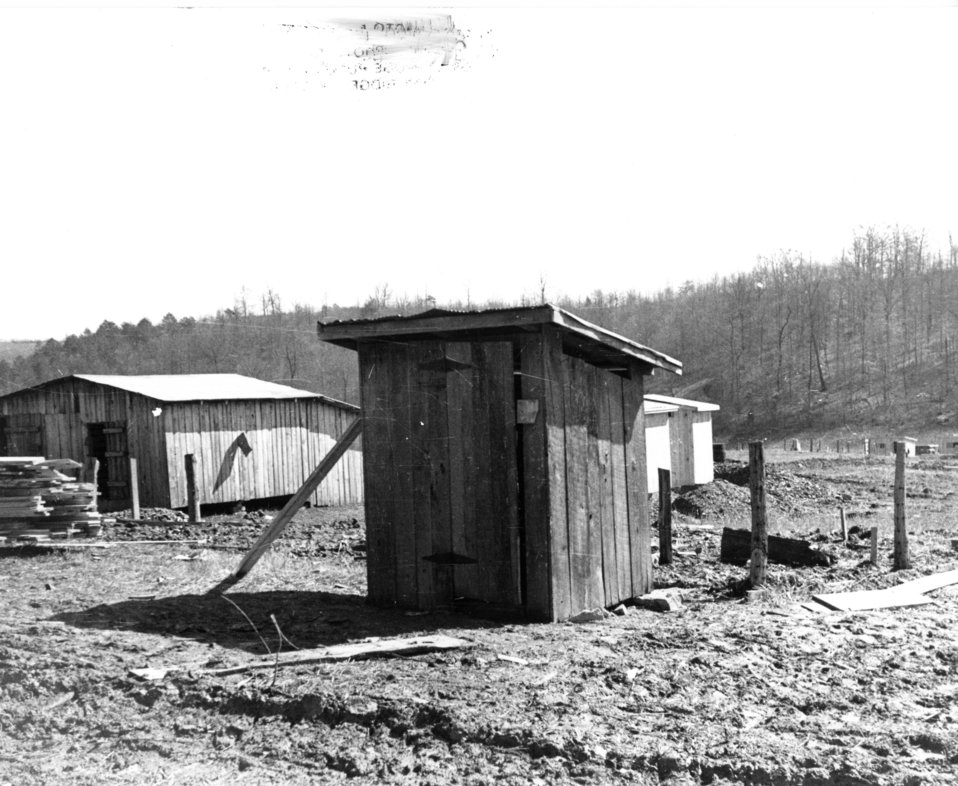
Early settlers at Oak Ridge